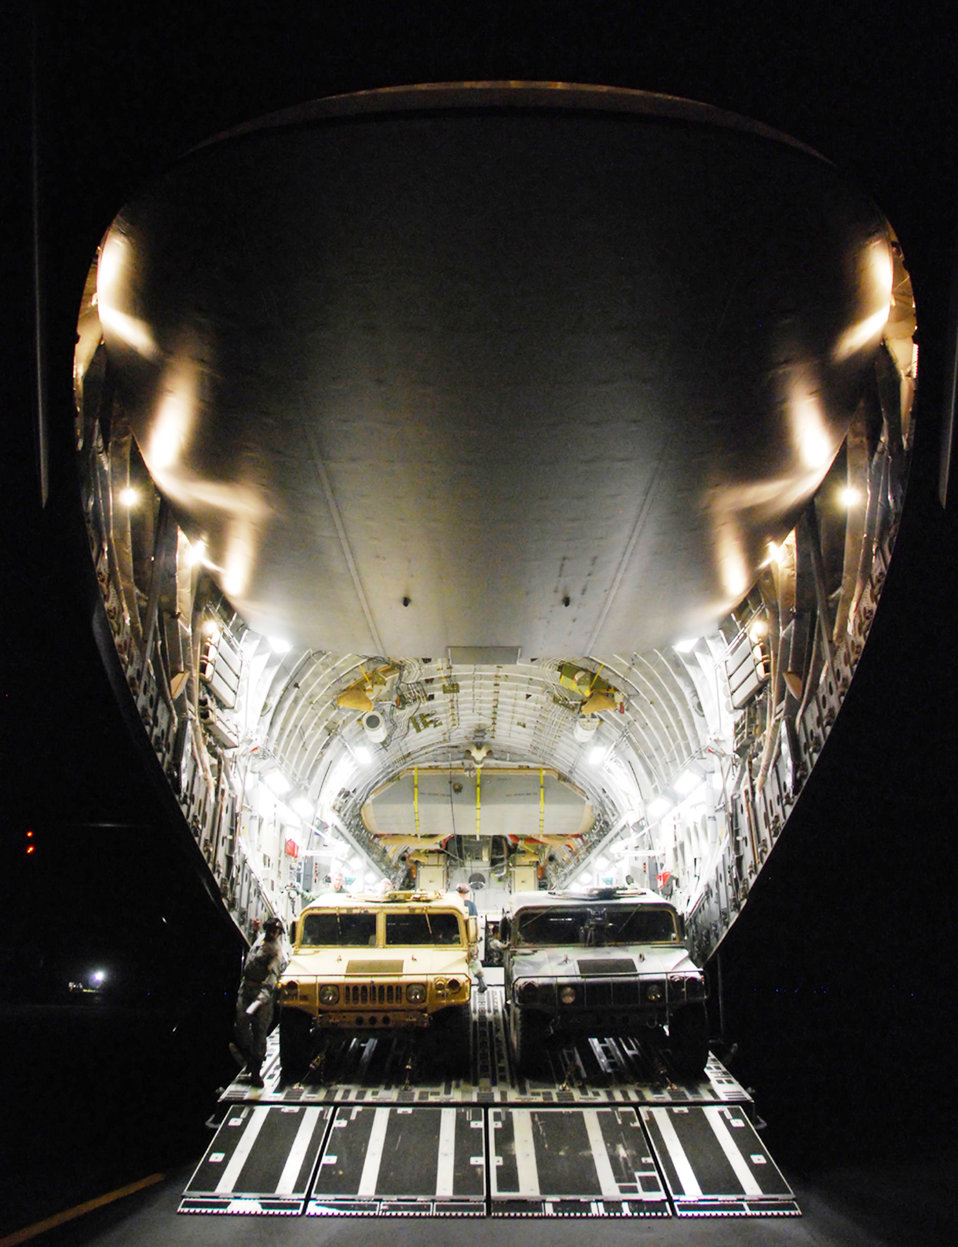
In they go

Airmen from the 621st Contingency Response Wing at McGuire Air Force Base, N.J., load two Army Humvees onto a C-17 Globemaster III June 26 during a noncombatant evacuation exercise at Mackall Army Airfield, N.C. During the exercise, CRW Airmen onloaded and offloaded more than 1,500 passengers and 75 short tons of cargo and equipment.